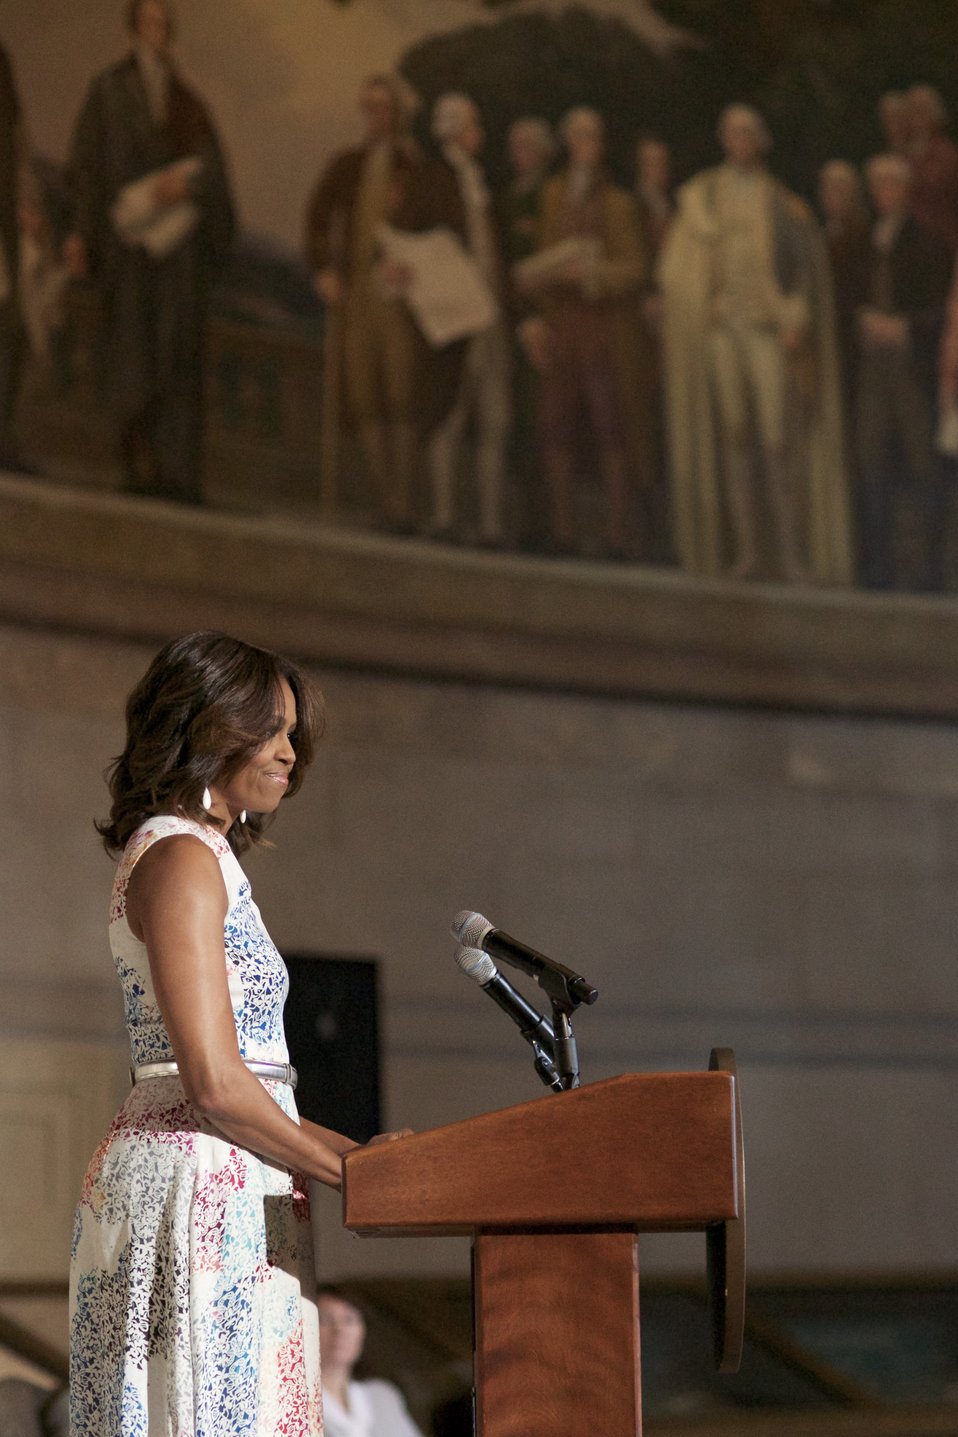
Naturalization Ceremony with Michelle Obama